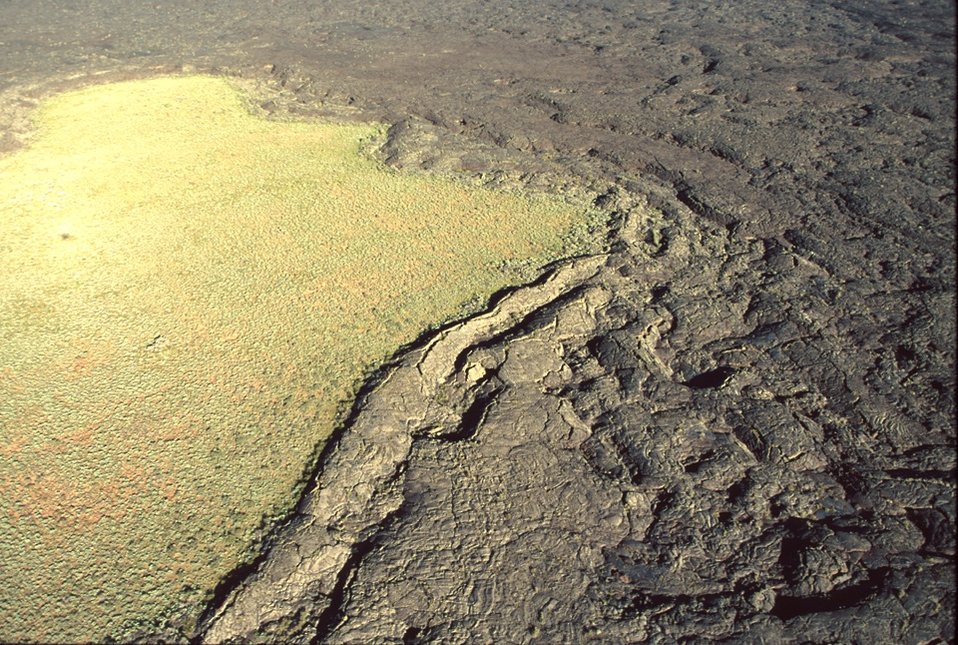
Shoshone Field Office USRD Upper Snake River District